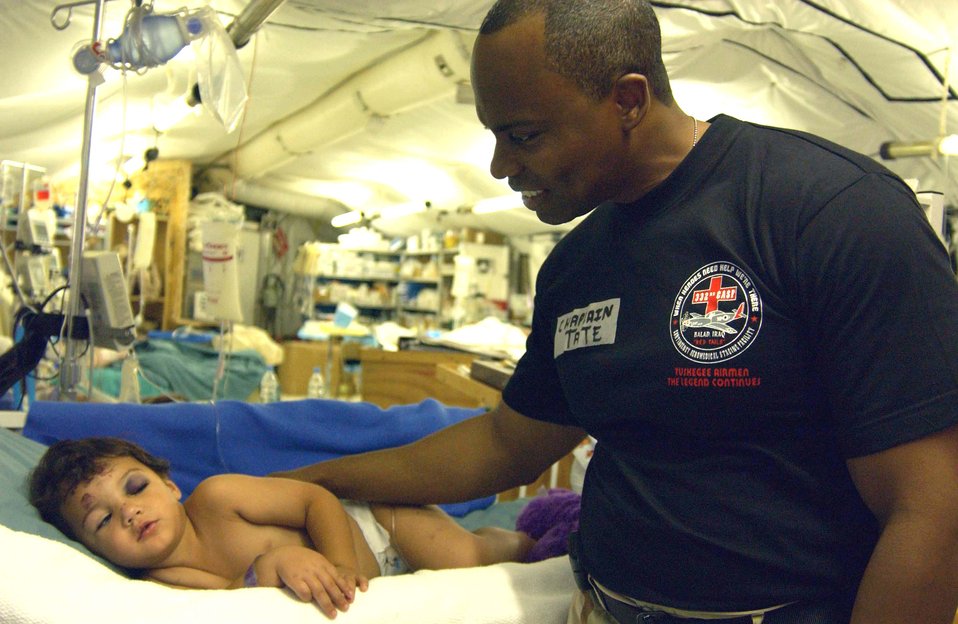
Airmen stay in spiritual shape in combat zone

Chaplain (Capt.) Jose Tate comforts an Iraqi child at the Air Force Theater Hospital at Balad Air Base, Iraq, on July 14. Chaplain Tate is specifically trained to provide the hospital's patients and staff spiritual support, services, counseling and sometimes just a friendly ear for those who want to talk. The chaplain is assigned to the 332nd Air Expeditionary Wing.